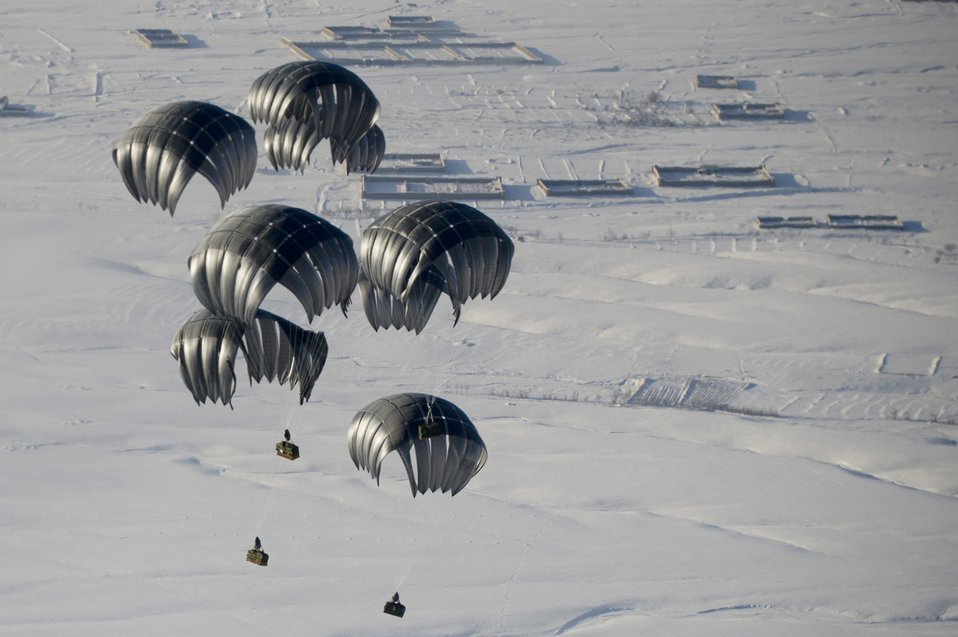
Air delivery cargo drop

Air delivery cargo is airdropped Mar. 3, 2011, to a remote operating base in Afghanistan.